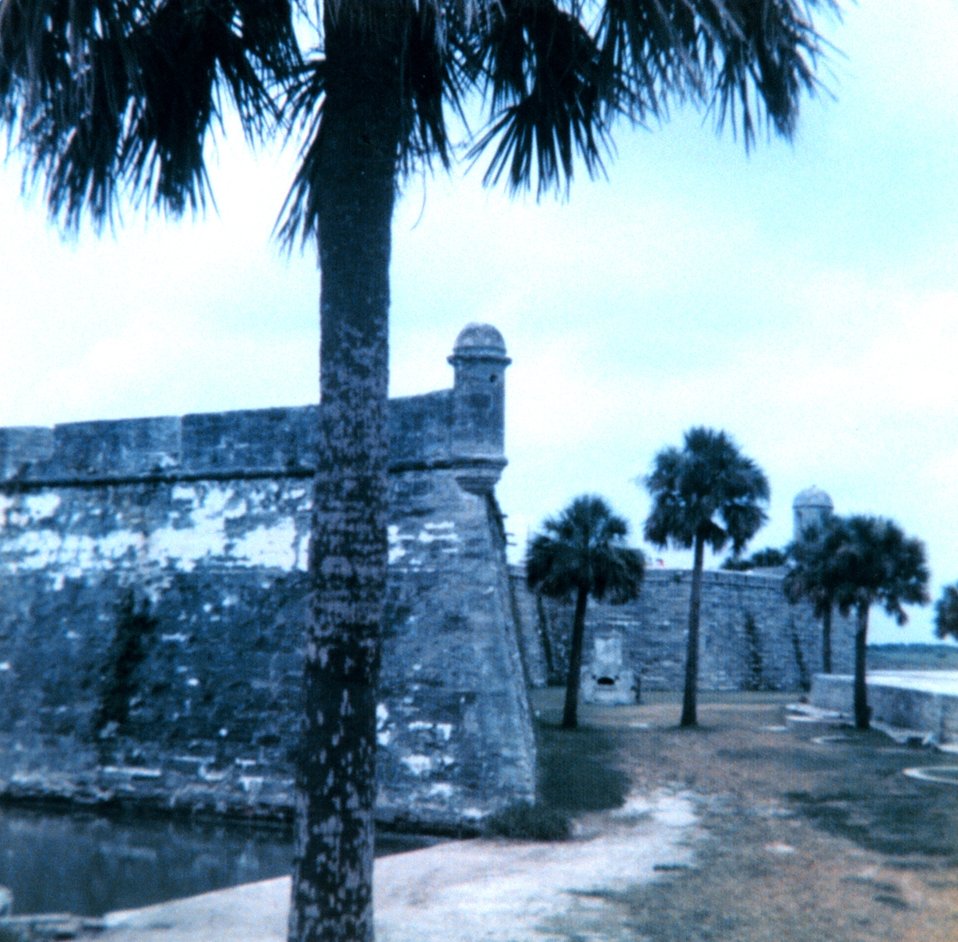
The old Spanish fort at St. Augustine, America's oldest city.